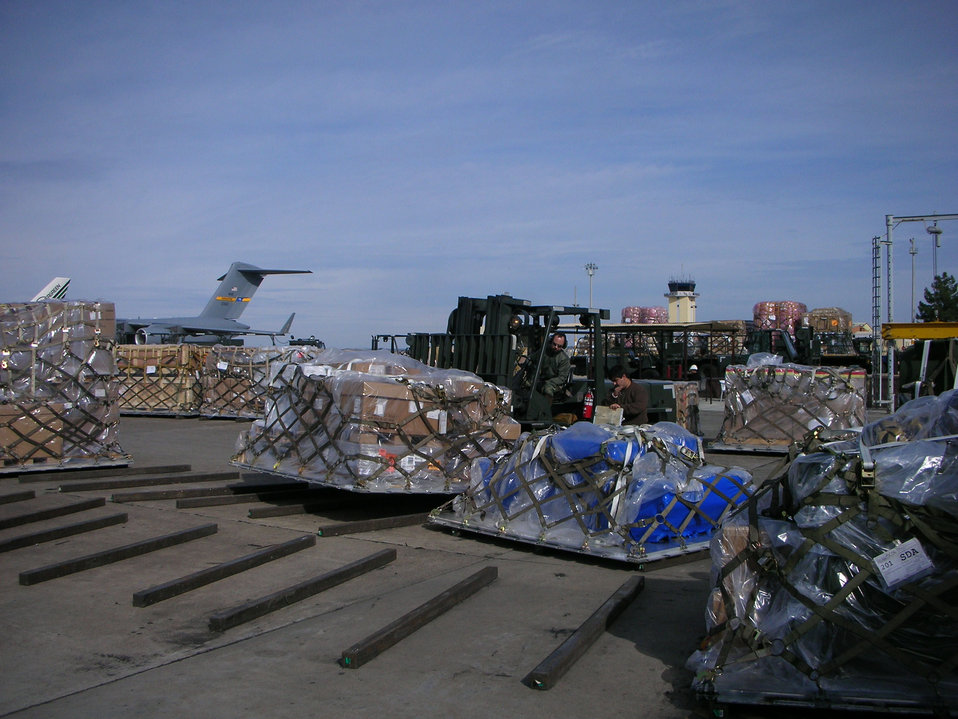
Cargo movers

INCIRLIK AIR BASE, Turkey (AFPN) -- Tech. Sgt. Paul Oxford moves another pallet of supplies a little closer to the warfighters in Iraq. Deployed from Travis Air Force Base, Calif., through the holidays, the ramp services supervisor at Incirlik AB adds to the unit's total of about 86,800 tons of cargo sent down range since June 1.